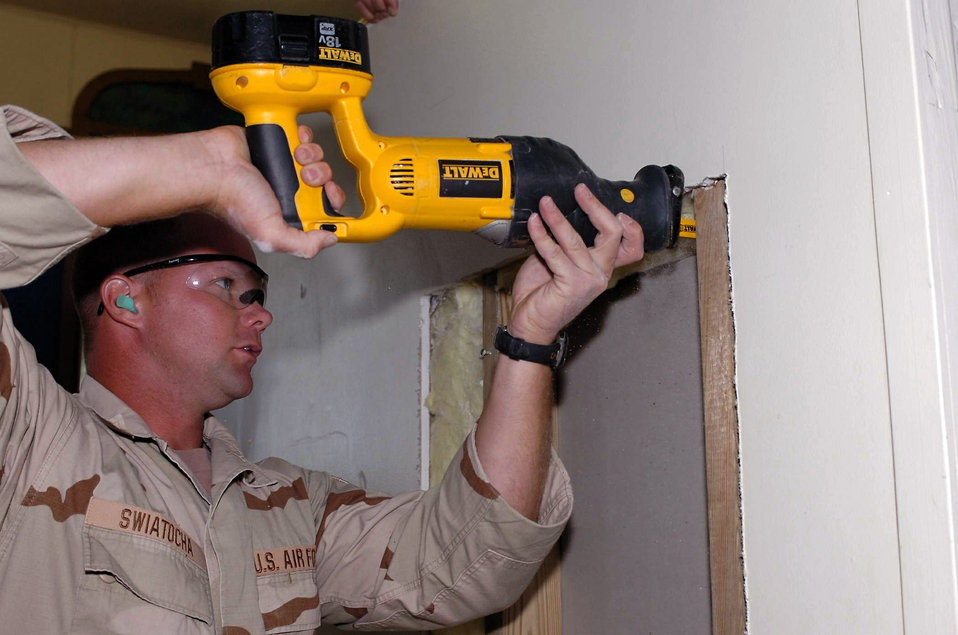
Finishing touches

Technical Sgt. Shawn Swiatocha cuts an access door into the rear panel of a sound booth at Naval Station Guantanamo Bay's base chapel Jan. 17 at Guantanamo Bay, Cuba. Sergeant Swiatocha and members of the Joint Task Force Guantanamo's 474th Expeditionary Civil Engineering Squadron structures team completed several construction projects around Naval Station Guantanamo Bay. JTF Guantanamo members conduct intelligence collection, analysis and dissemination for the protection of detainees and personnel working in JTF Guantanamo facilities. Sergeant Swiatocha is a structural craftsman and Air National Guard member.